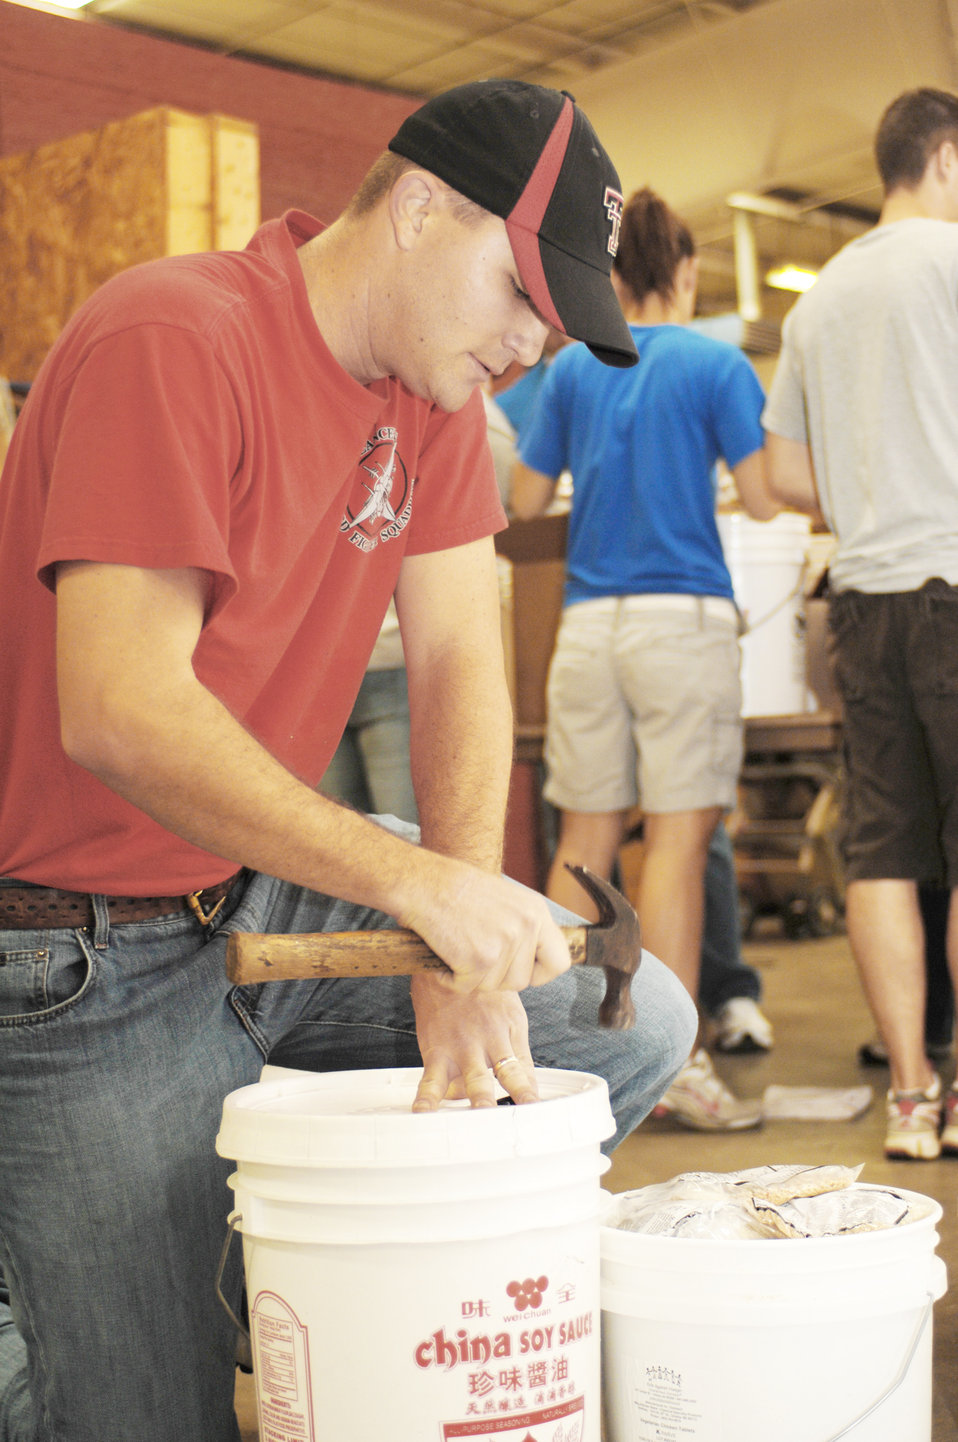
Airmen aid Stop Hunger Now

1st Lt. Michael Hefferly hammers down a bucket full of rice- and soy-based meals for shipment to Afghanistan during the Stop Hunger Now event Oct. 24, 2009, at the MERCI Mission Center in Goldsboro, N.C. The items are shipped to Afghanistan courtesy of the Denton Program, which allows private U.S. citizens and organizations to use space available on U.S. military cargo planes to transport humanitarian goods and supplies to countries in need. Lieutenant Hefferly is a 333rd Fighter Squadron weapon system officer from Seymour Johnson Air Force Base, N.C.